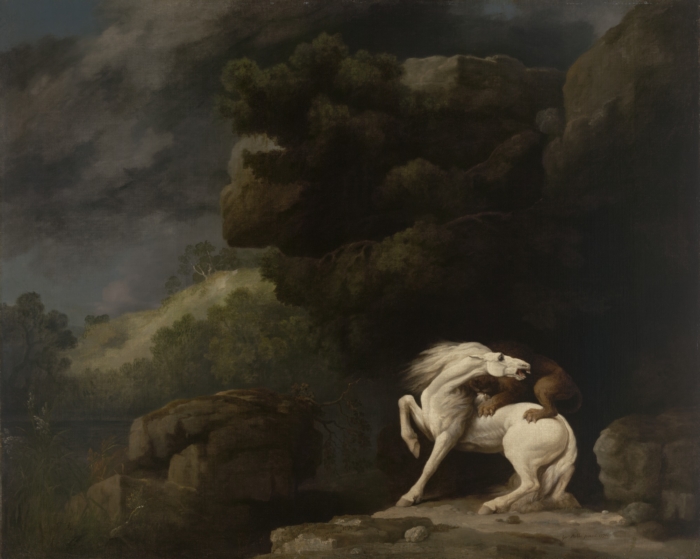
A Lion Attacking a Horse by George Stubbs 1770